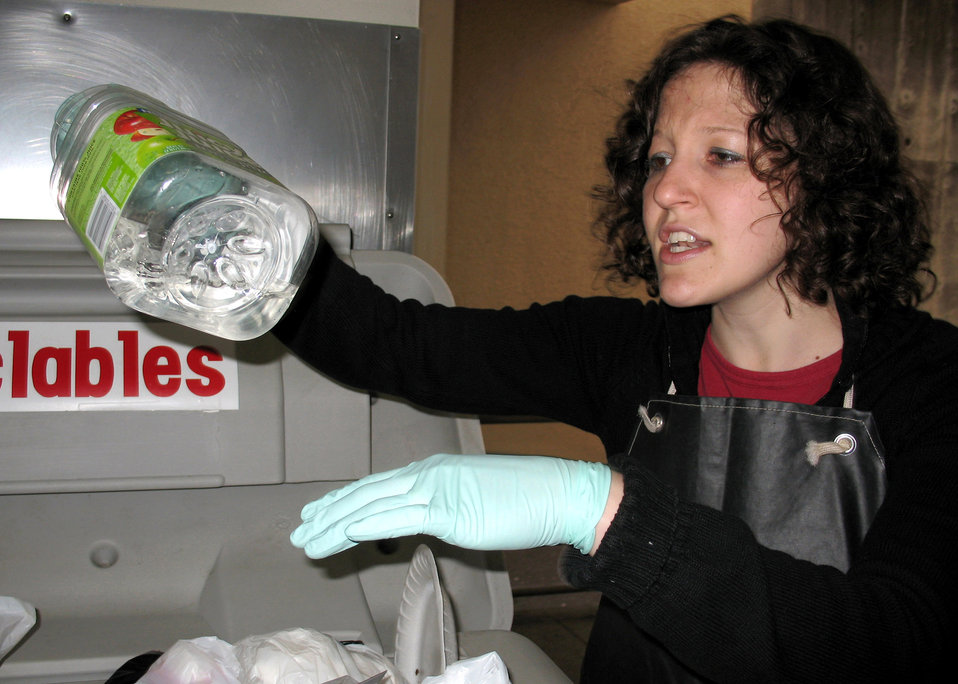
'Dumpster diving' raises awareness about recycling

Sara Schmidt holds a recyclable plastic bottle she found with non-recyclable garbage April 24 at Yokota Air Base, Japan. Yokota West Elementary School 5th grade students and teachers went dumpster diving to evaluate how well base residents recycle. Ms. Schmidt is a 5th Grade teacher at the school.